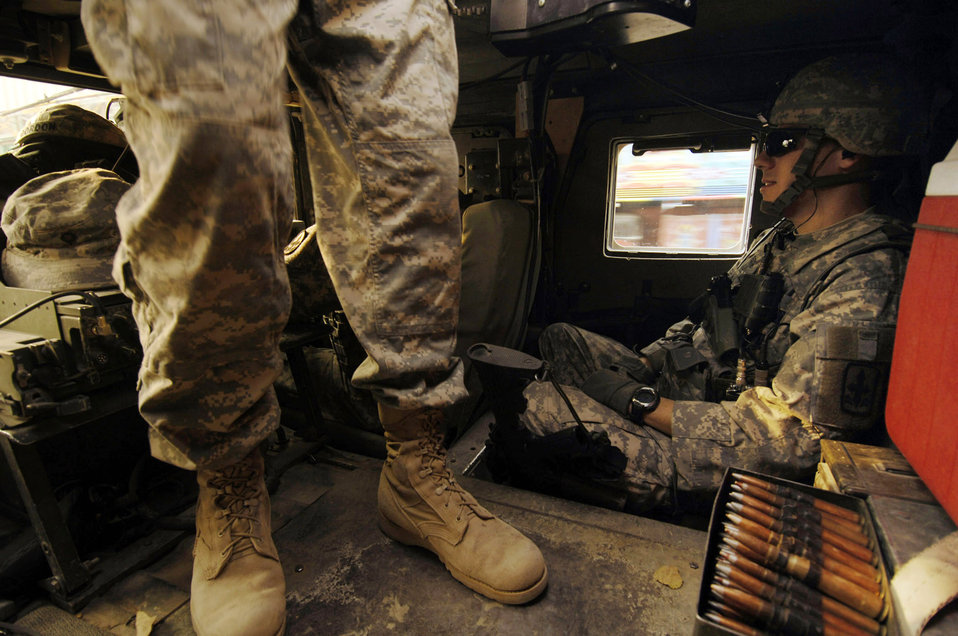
Reconstruction team aids Afghan communities

Members of the Nangarhar Provincial Reconstruction Team travel by Humvee on a canal assessment mission Nov. 10 in Afghanistan. The PRT assesses community needs and then builds schools, government centers, roads, medical capabilities and basic infrastructure throughout Nangarhar; they also personally mentor Afghan government officials and security forces to provide the Afghan people with the state representation and security they need.